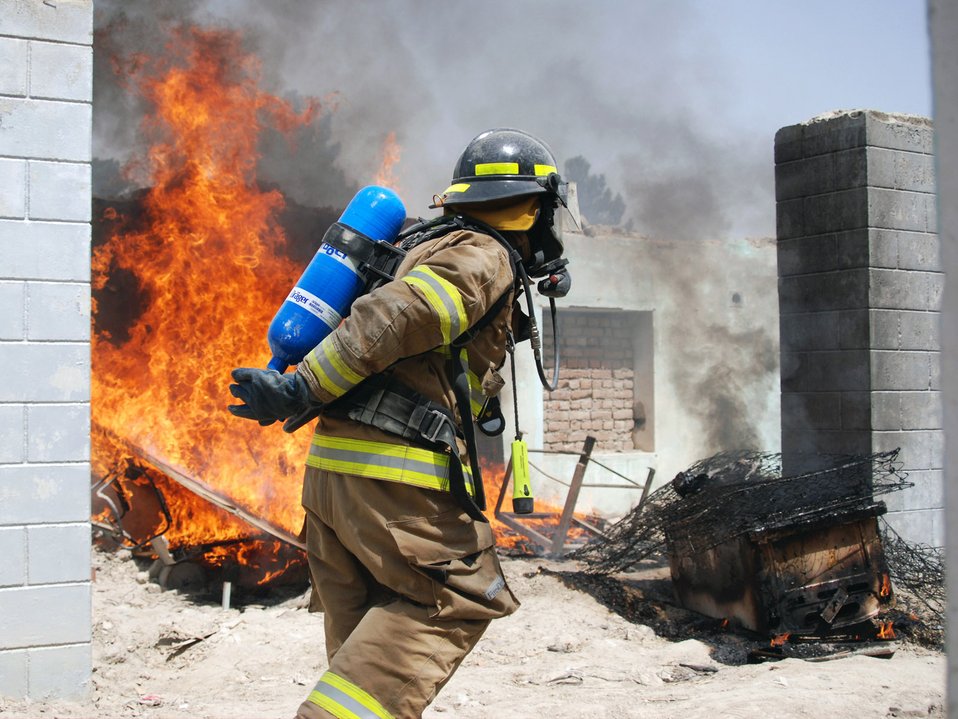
Afghan National Army Air Corps students hone their firefighting skills

A member of the Afghan National Army Air Corps responds to a fire during an exercise May 12 at Kabul, Afghanistan, while attending a firefighting course. The four-month course was mentored by Master Sgt. Michael Marascia from the Combined Air Power Transition Force.